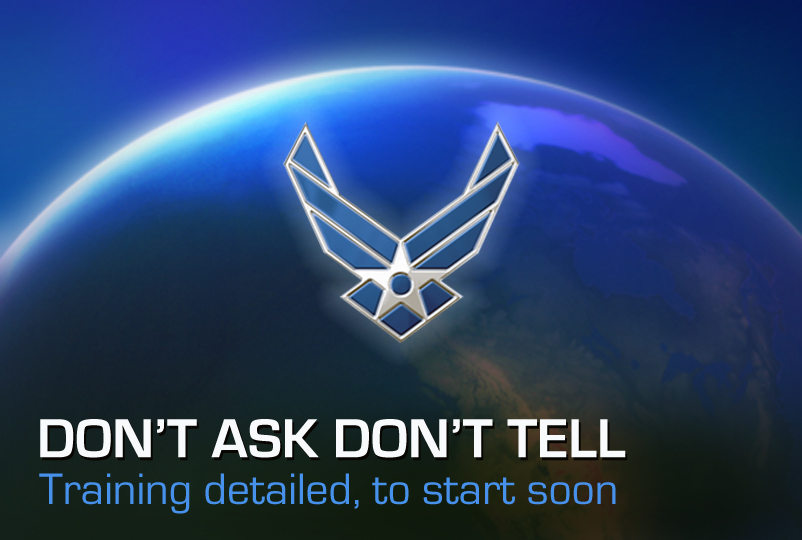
Don't Ask, Don't Tell